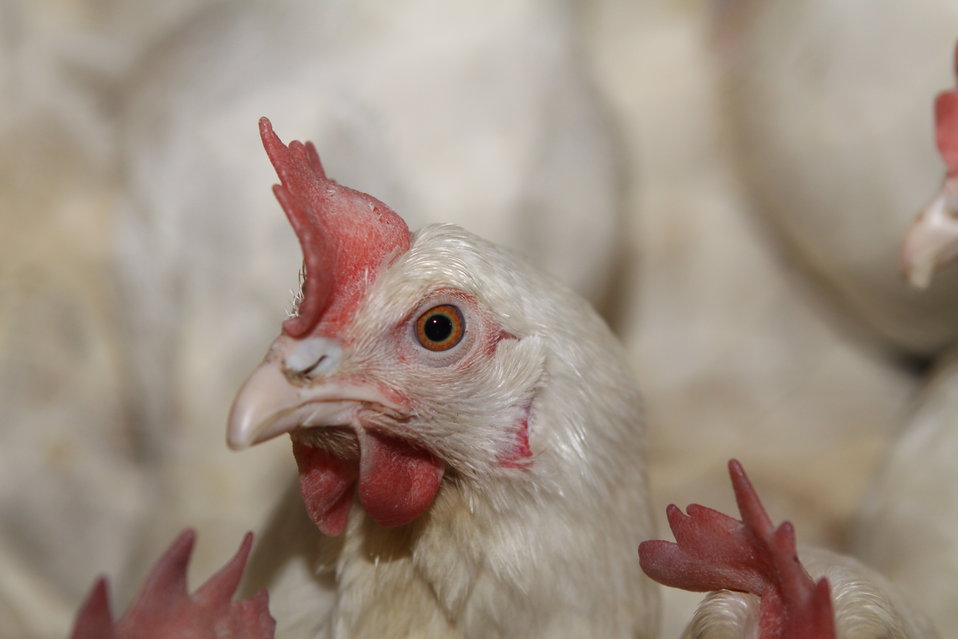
Bolan Poultry Farm